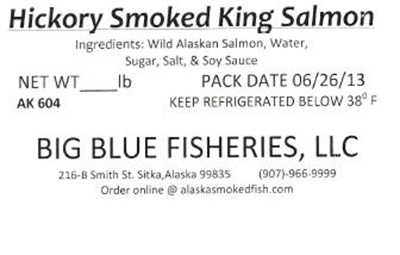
RECALLED – Salmon, Cod

September 30, 2013 – Product Recall – Big Blue Fisheries, Llc Recalls All Smoked Products From All Lots, Various Sizes, in Vacuum Packaging Because of Possible Health Risk.